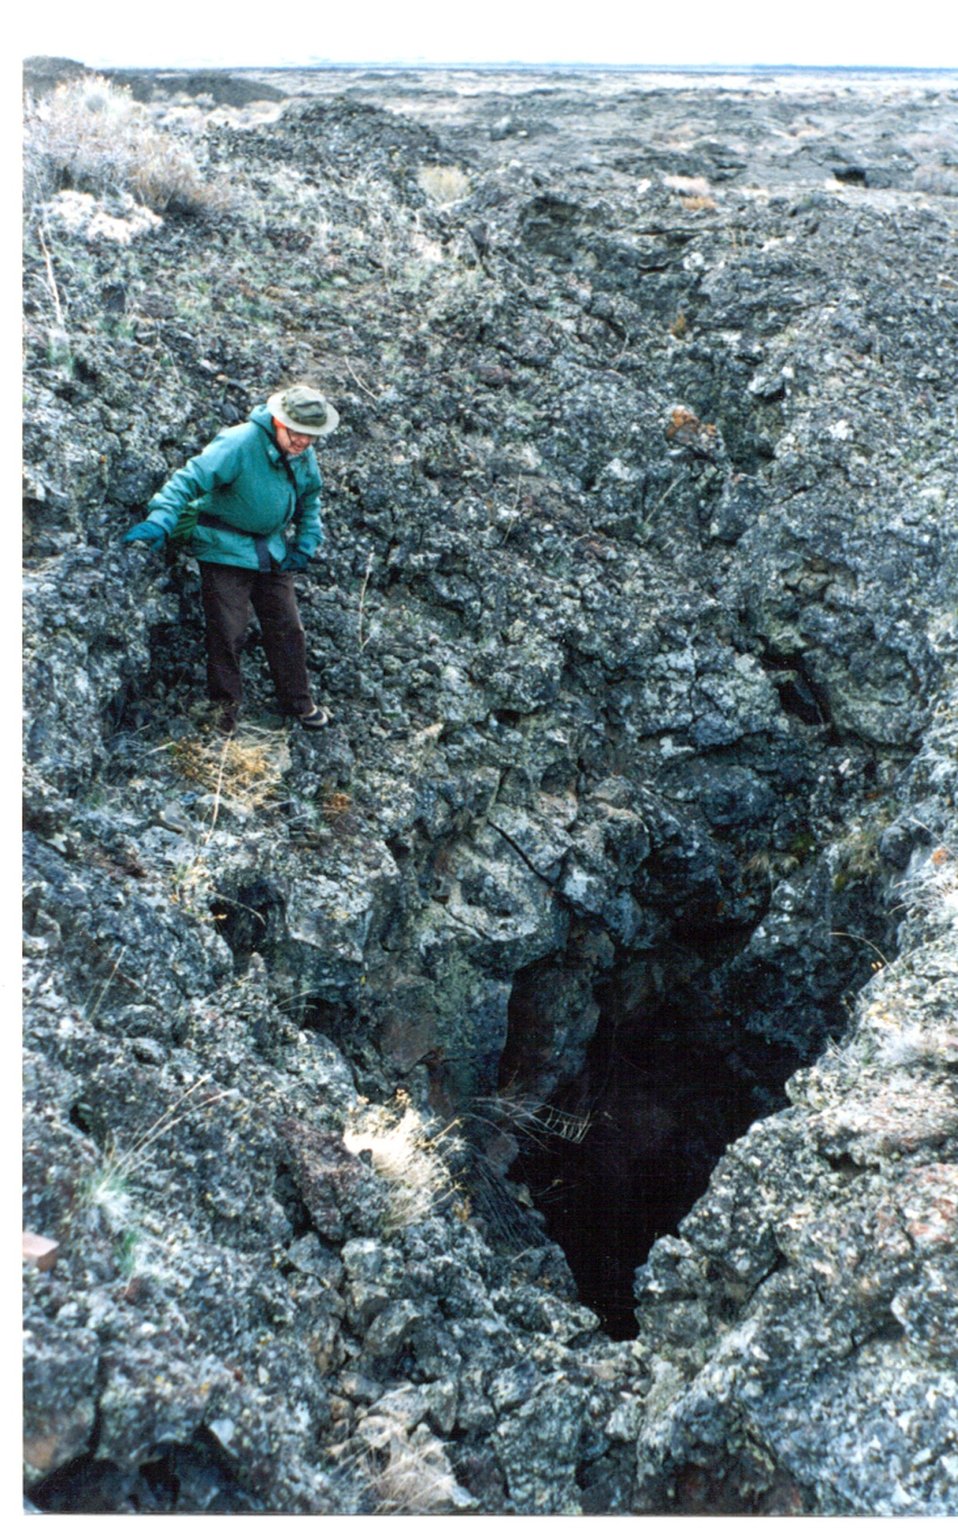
Rift Hole Craters of the Moon Shoshone Field Office USRD Upper Snake River District